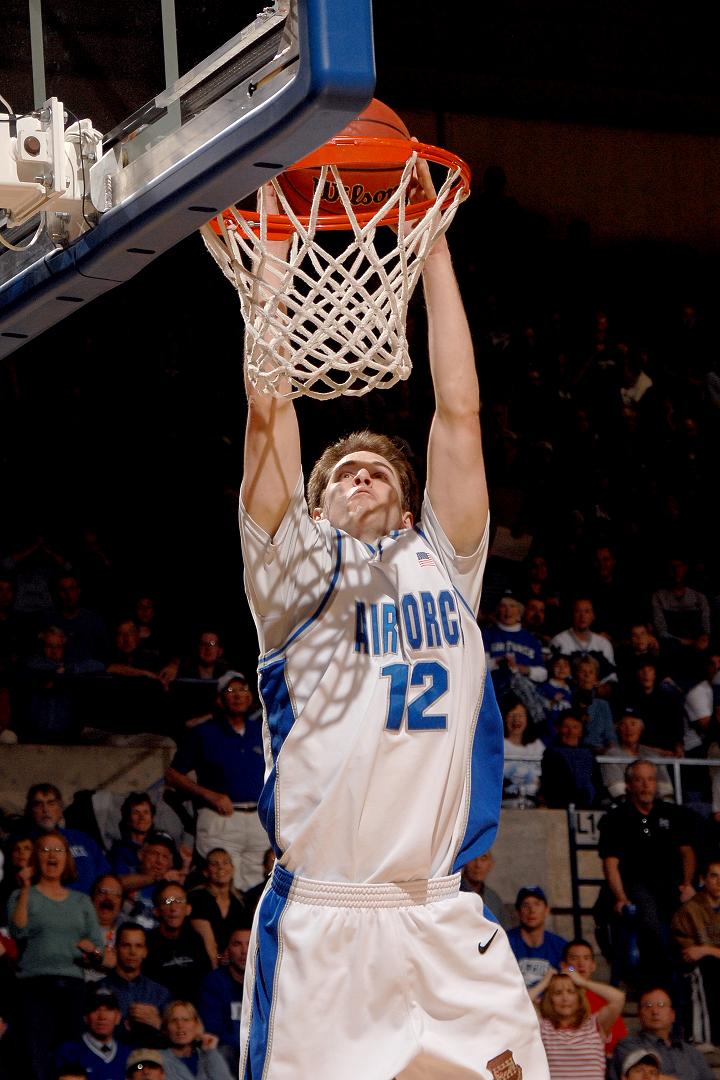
Falcon forwards march over Georgia in NIT

Air Force forward guard Tim Anderson brings the crowd at the academy's Clune Arena to its feet with a slam dunk March 19 in the second round of the National Invitation Tournament against Georgia. With their 83-52 win, Air Force set a school record for wins in a season at 25.